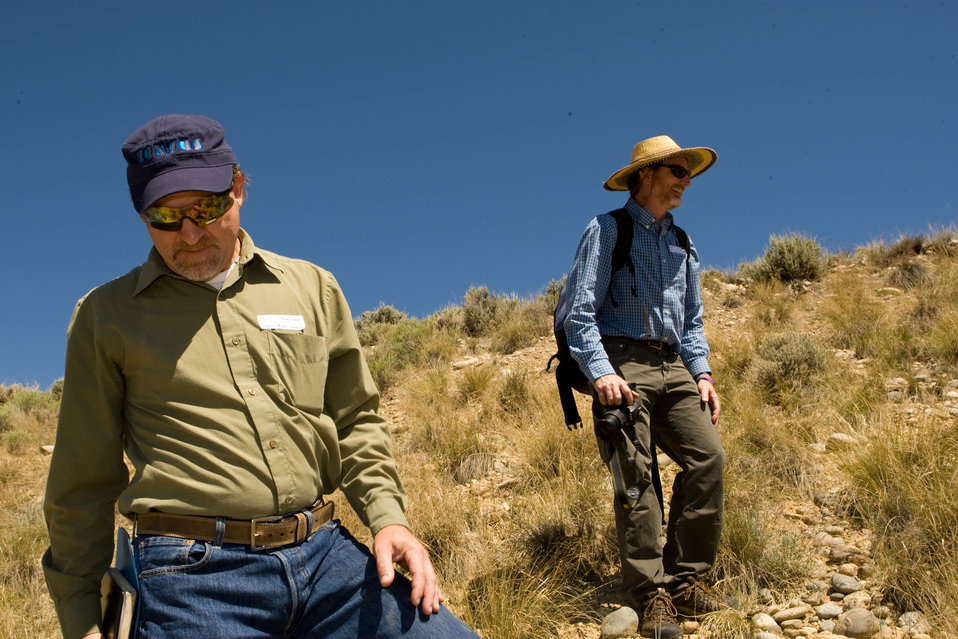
Colorado Rare Plant Conservation Initiative

The Colorado Rare Plant Conservation Initiative (RPCI) is a partnership of 23 statewide and regional agencies, private organizations, and academic institutions working to conserve 121 rare plants in Colorado. As part of these efforts the group developed the Colorado Rare Plant Conservation Strategy, developed Best Management Practices to reduce energy development impacts, addressed climate change, and developed focused strategies for the conservation of individual species at eight priority landscapes. The group has also worked to coordinate volunteer efforts for plant conservation across the state.